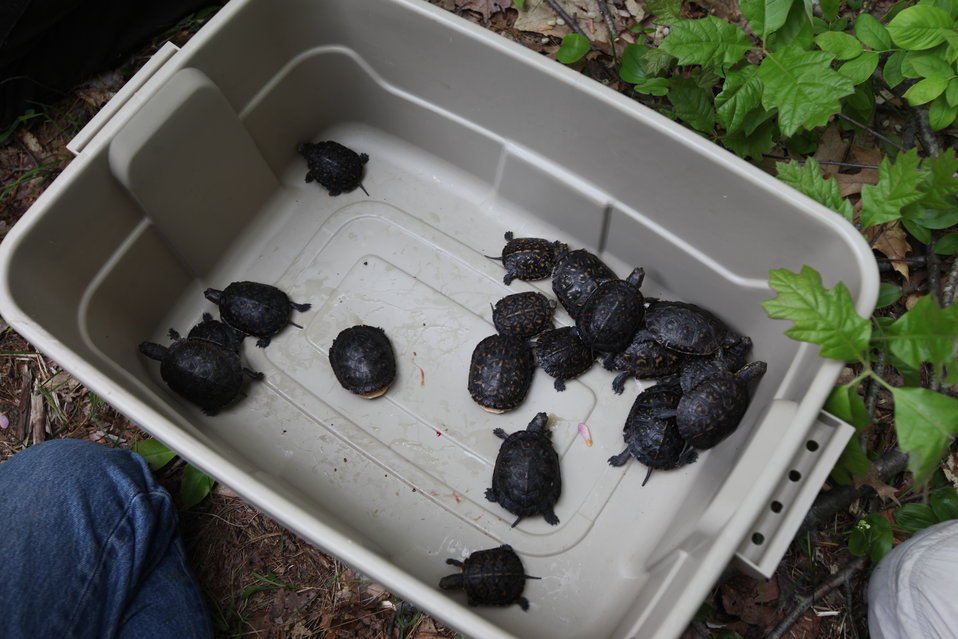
Turtles Ready to be Released

Blanding's turtle release, Assabet River, MA.